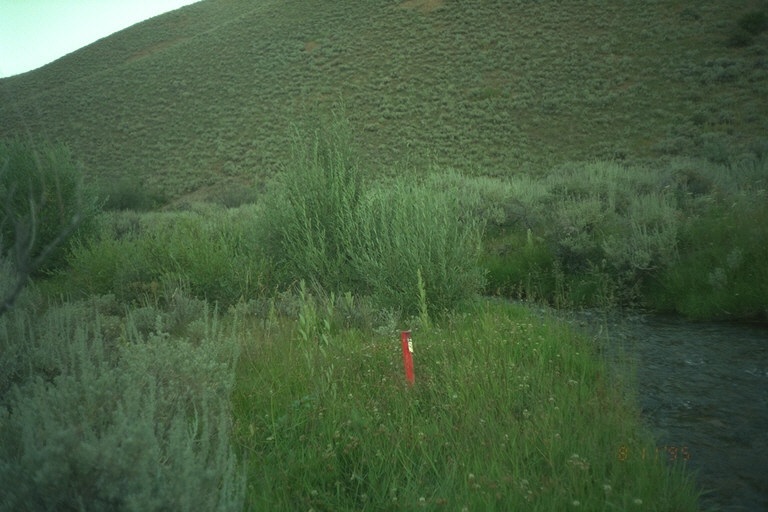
Riparian area Public Lands Salmon Field Office UCSC Upper Columbia Salmon Clearwater District